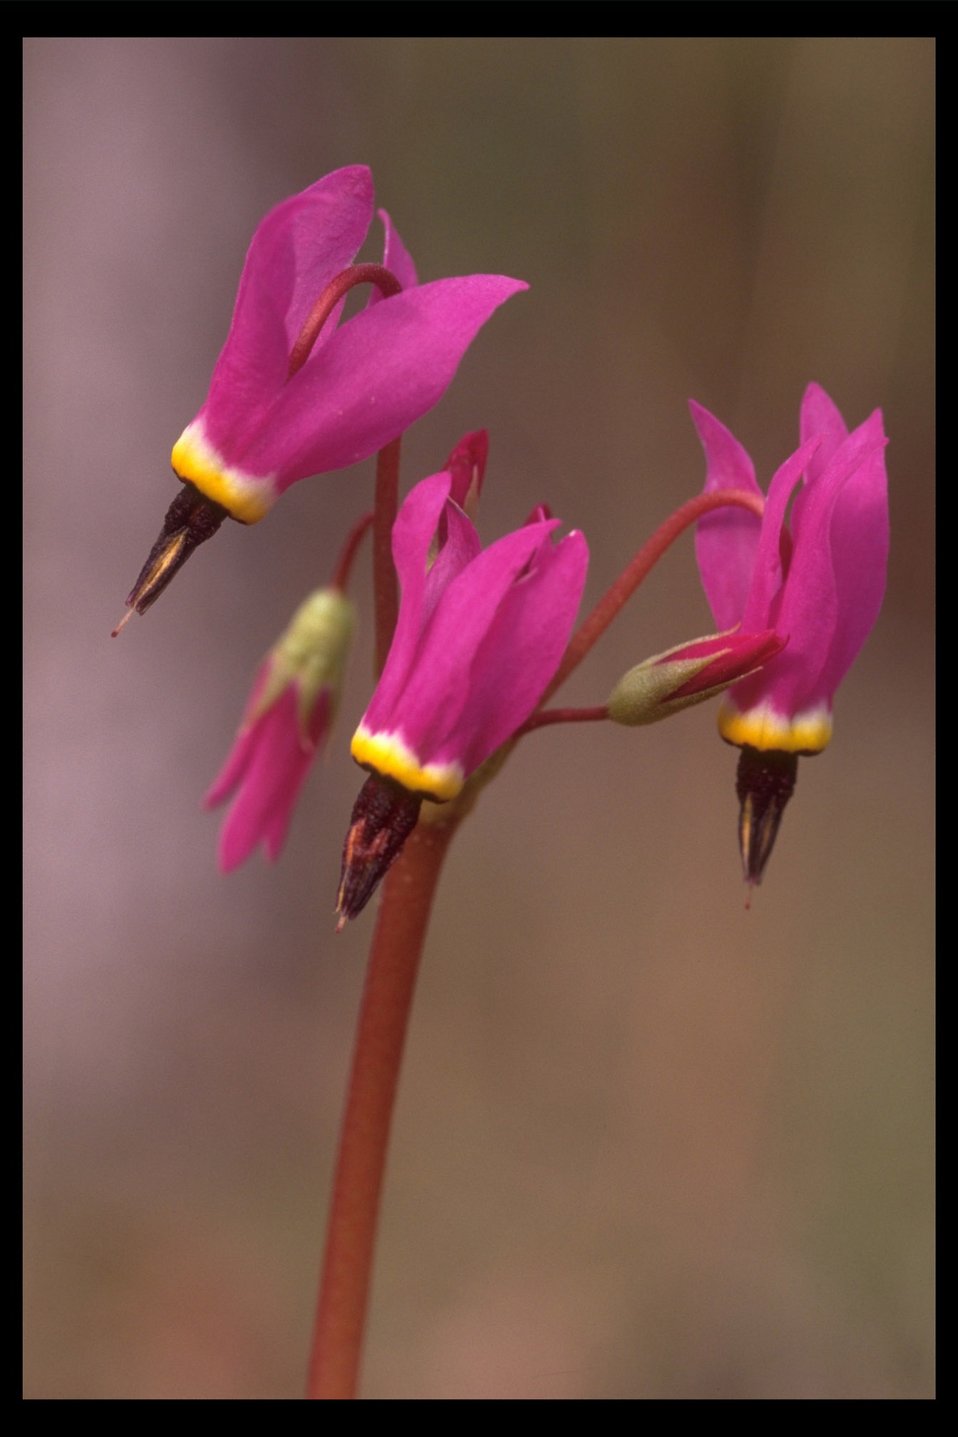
Close up of Henderson's Shooting Star (Dodecatheon hendersonii) at Upper Table Rock (UTR).